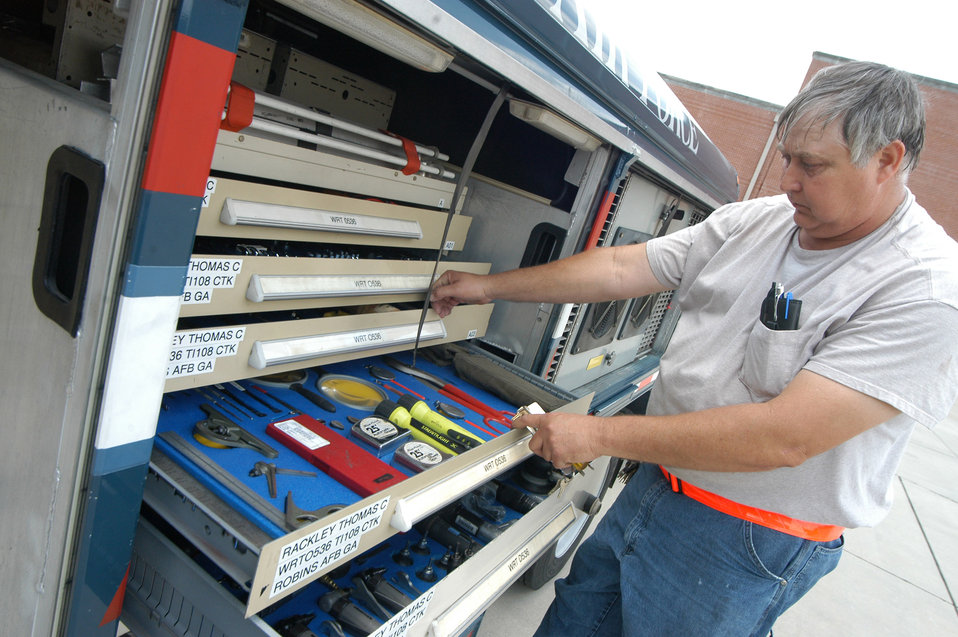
Robins 'War Wagons' bring maintenance to warfighters

Allan Widener has anything he needs for a repair at his fingertips inside the War Wagon in May at Robins Air Force Base, Ga. The 37-foot long, tractor-trailer based at the 402nd Commodities Maintenance Group deploys around the world with a traveling repairman in support of the warfighter anywhere at a moment's notice. Mr. Widener is a driver and mechanic from Robins AFB.